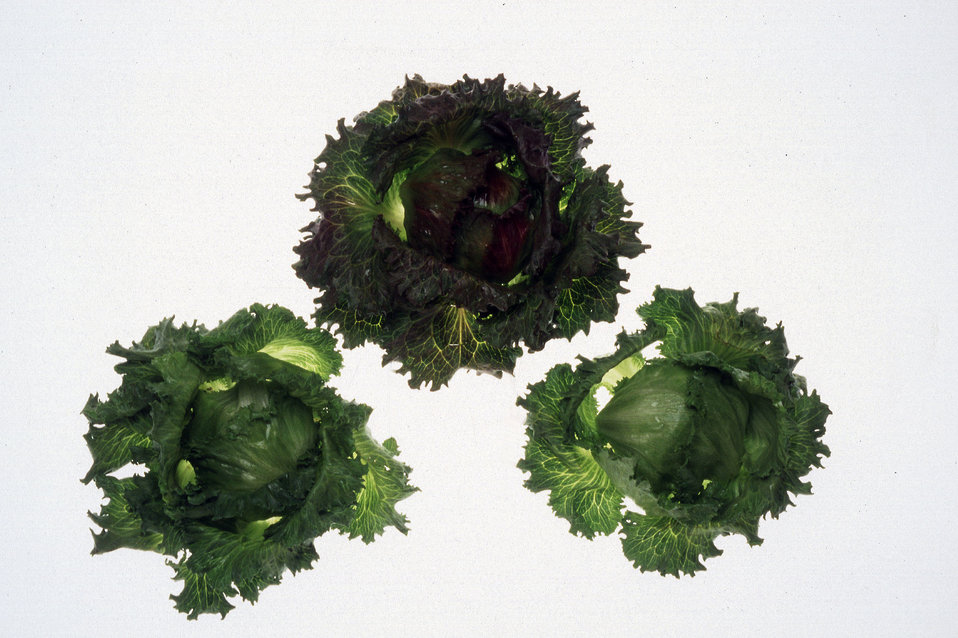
Nearly every head of iceberg lettuce you'll find in a supermarket owes its parentage to the work of U.S. Department of Agriculture (USDA) Agricultural Research Service (ARS) plant breeders. Salinas iceberg lettuce and its progeny are the most widely planted iceberg lettuces in the Salinas Valley of California and the world's foremost lettuce-growing region.